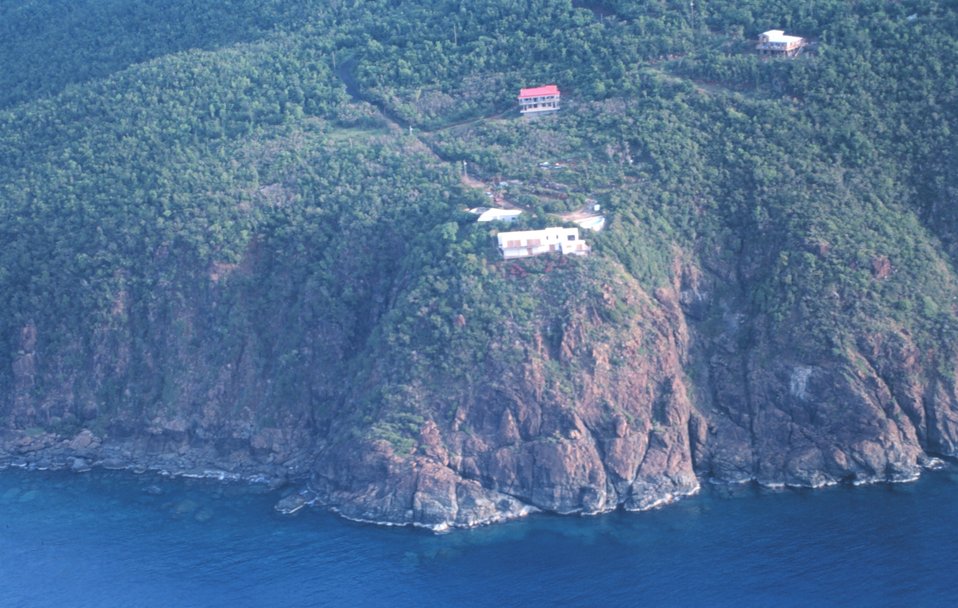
View of Fortuna Bay on approach to Cyril E. King Airport